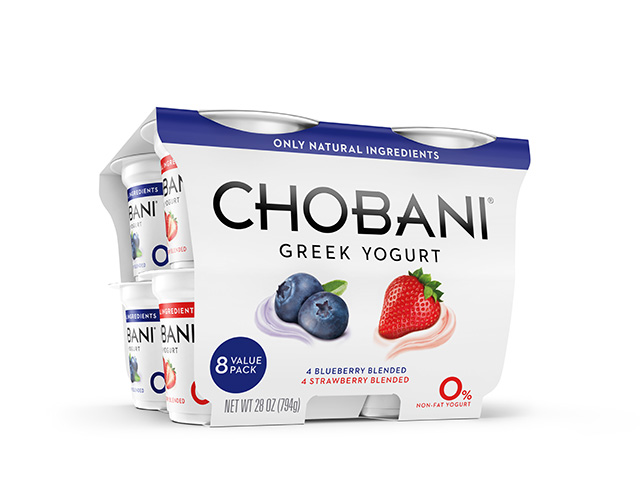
RECALLED – Greek yogurt products

September 6, 2013 – Product Recall – Chobani, Inc. Voluntarily Recalls Greek Yogurt Because of Product Concerns.